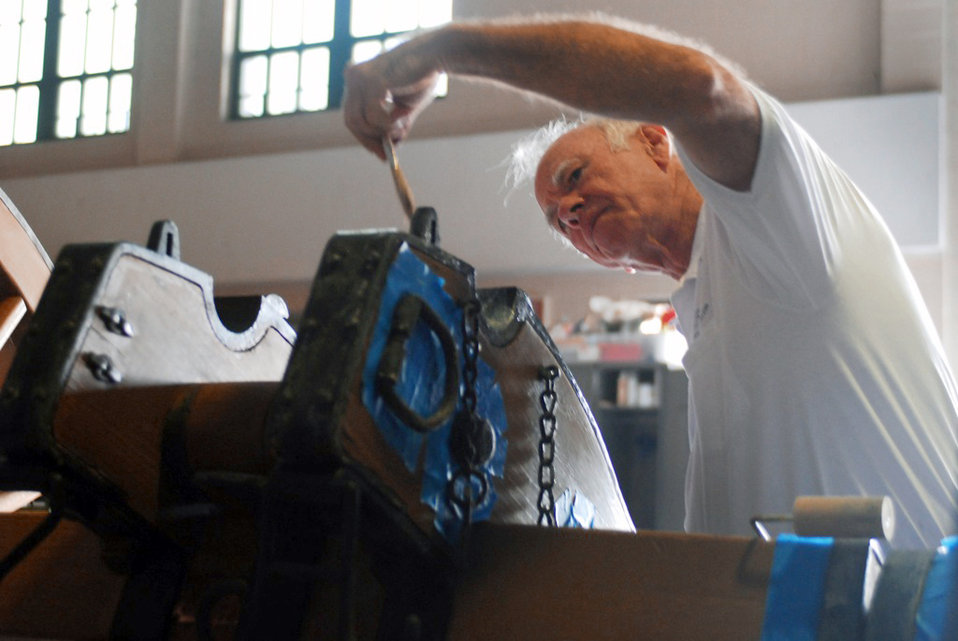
122nd BSRU

Retired Army Capt. Charles Monsted removes the rust from an 1860 Parrot Cannon Oct. 27, 2010, to be displayed in the Jackson Barracks Museum in New Orleans. The 122nd Bomb Squadron Restoration Unit is a group of volunteer retired Guardsmen who meet every Wednesday to help restore old military aircraft and cannons for the Jackson Barracks Museum. Captain Monsted is a member of the 122nd Bomb Squadron Restoration Unit.